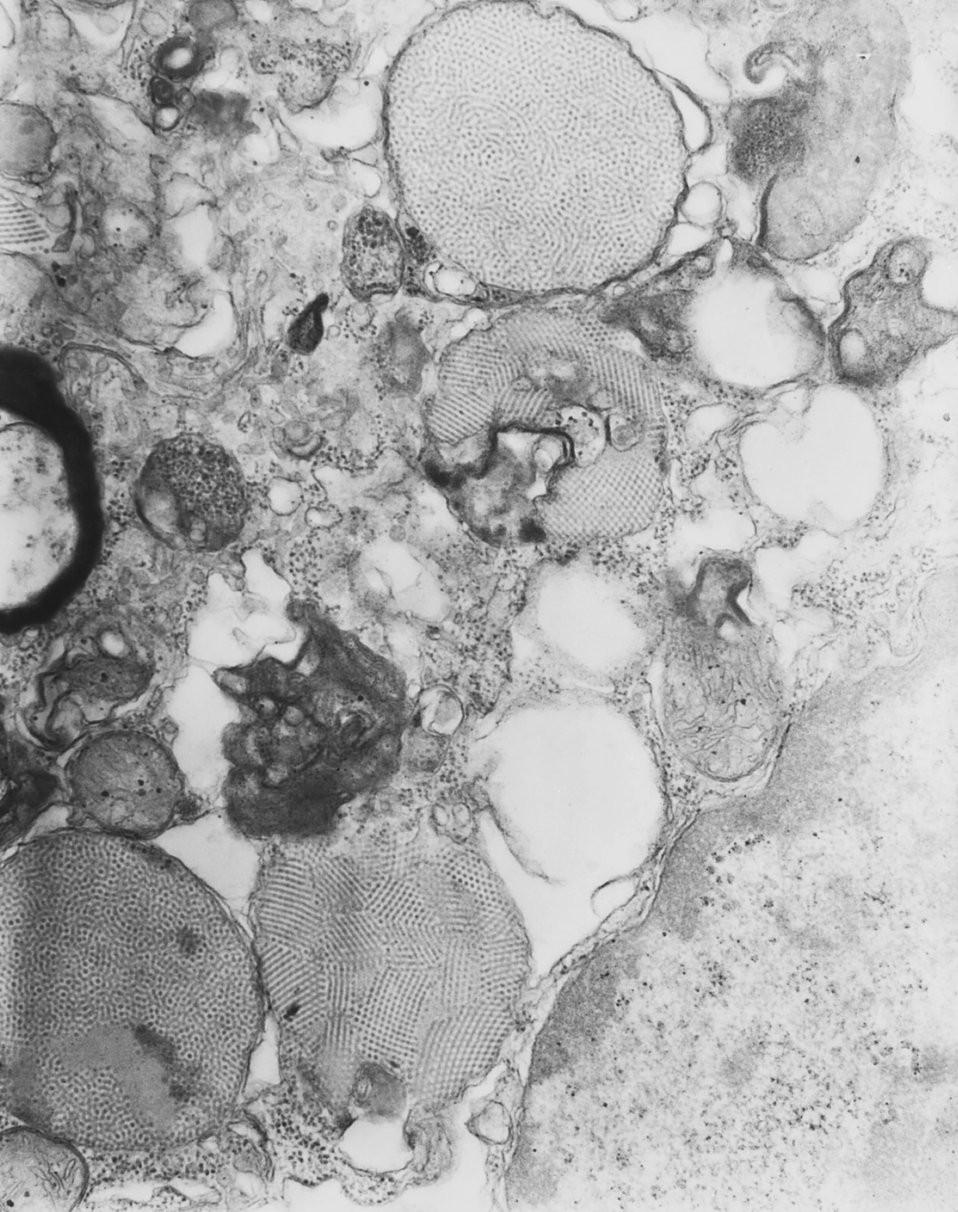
This transmission electron micrograph (TEM) revealed the presence of numbers of Nodamura virus virions. At its core, the Nodamura virus possesses a positive-sense, single-stranded RNA virus (( ) ssRNA) genome. Its outer protein coat, or 'capsid', is icosahedral (T=3) in shape, which means that its composed of 32 equilateral, triangular facets.